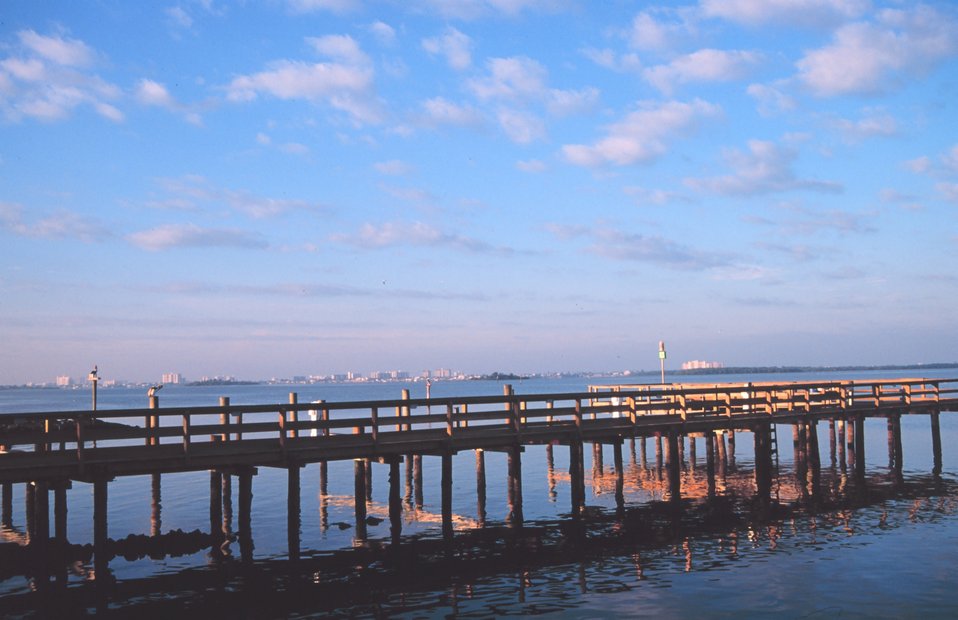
Clearwater, Florida, seen in the distance from a fishing marina